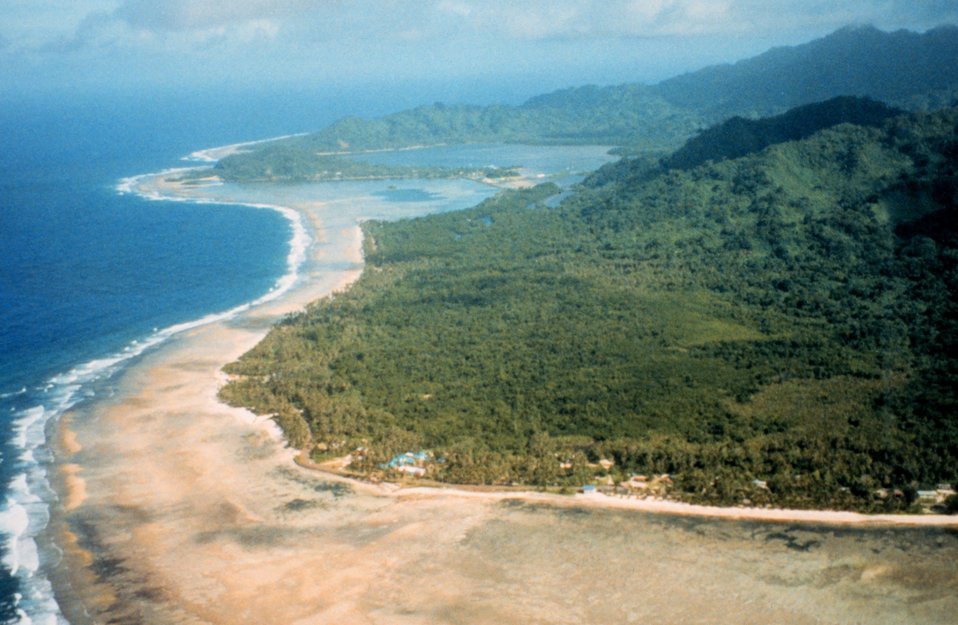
Flying into Western Samoa - prominent fringing reef